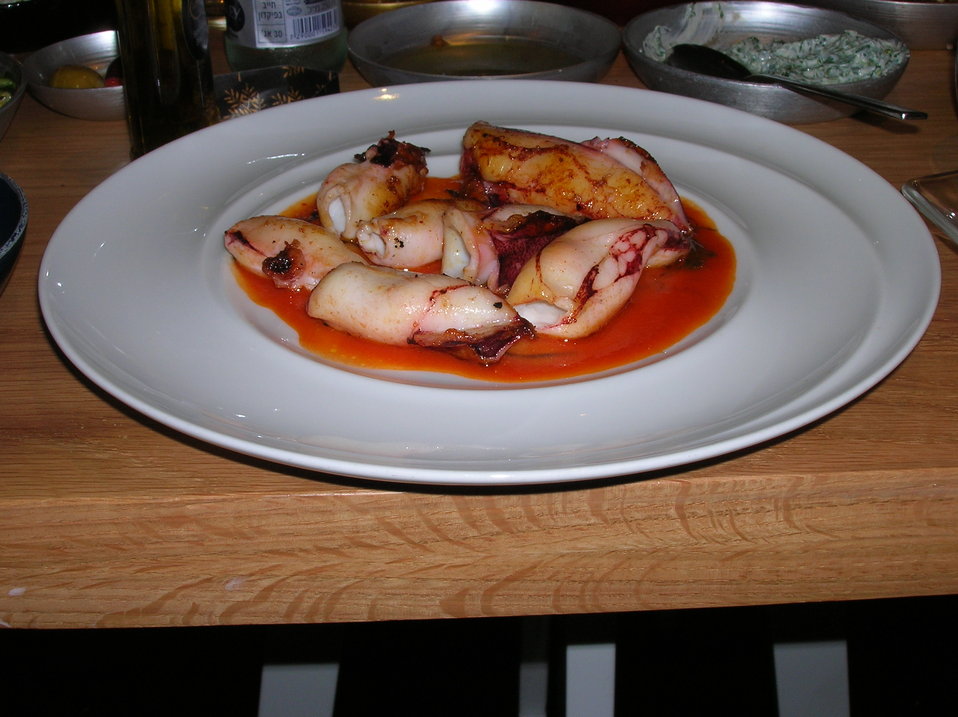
עברית: קלמרי על הפלנצ'ה, עם קרם עגבניות פיקנטי וריחן סגול